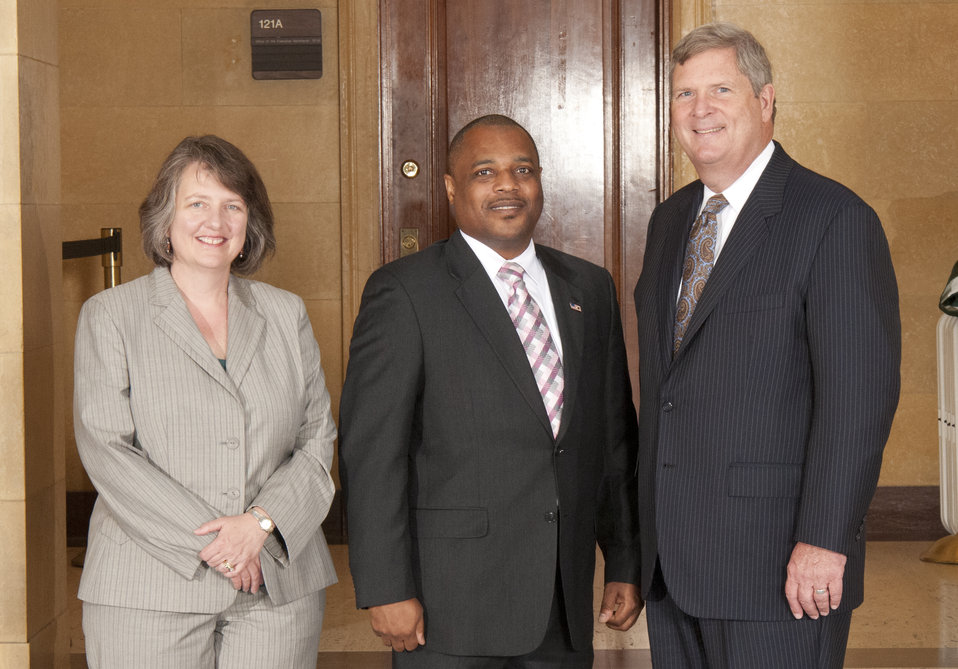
Agriculture Secretary Tom Vilsack and Deputy Agriculture Secretary Kathleen Merrigan with Mark L. Kemp, Grain Inspection, Packers and Stockyards Administration (GIPSA) during the Honor Award group photography on the patio of the U.S. Department of Agriculture in Washington, D.C. on Wednesday, Sept. 12, 2012.